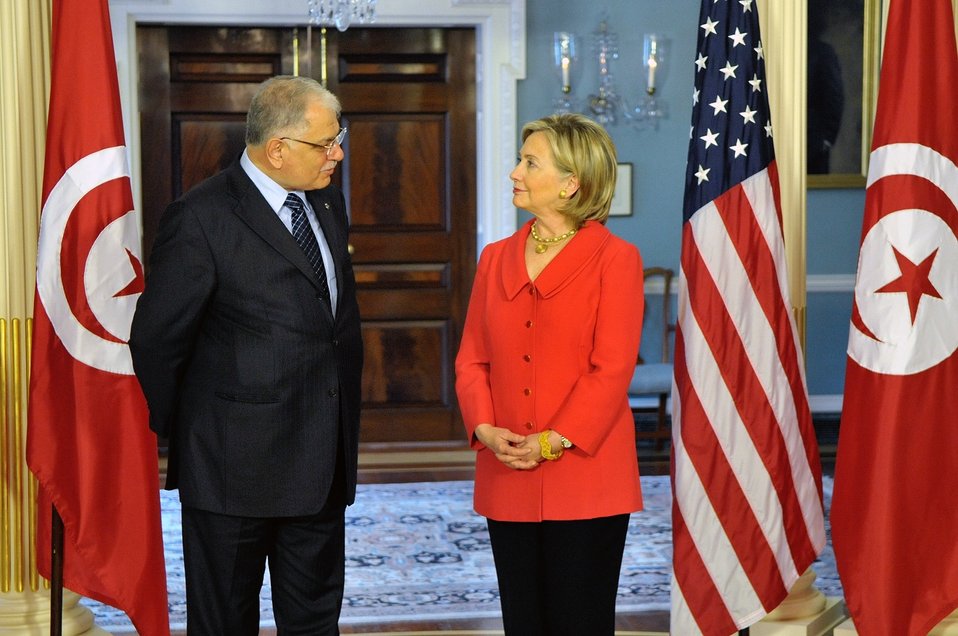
Secretary Clinton Speaks With Tunisian Foreign Minister Morjane

U.S. Secretary of State Hillary Rodham Clinton speaks with Tunisian Foreign Minister Kamel Morjane after a bilateral meeting in the Treaty Room at the U.S. Department of State, Washington, DC, April 28, 2010.